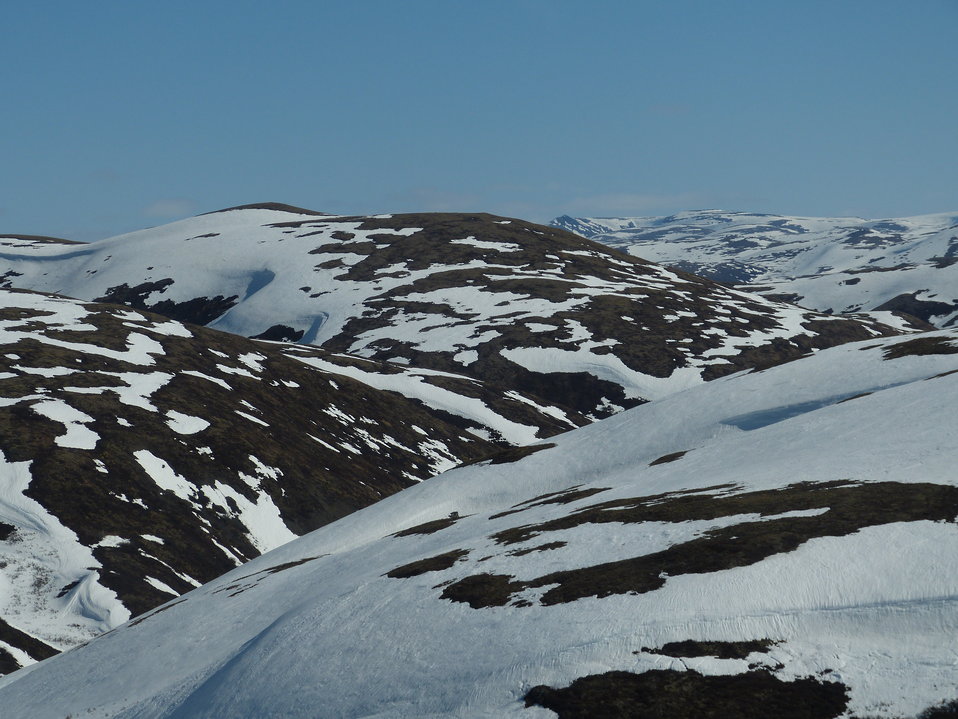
Kilbuck Mountains May2013 KSowl

Cliff-nesting raptor survey, Kilbuck Mountains, Yukon Delta National Wildlife Refuge

Photo credit: Kristine Sowl,
USFWS, YDNWR